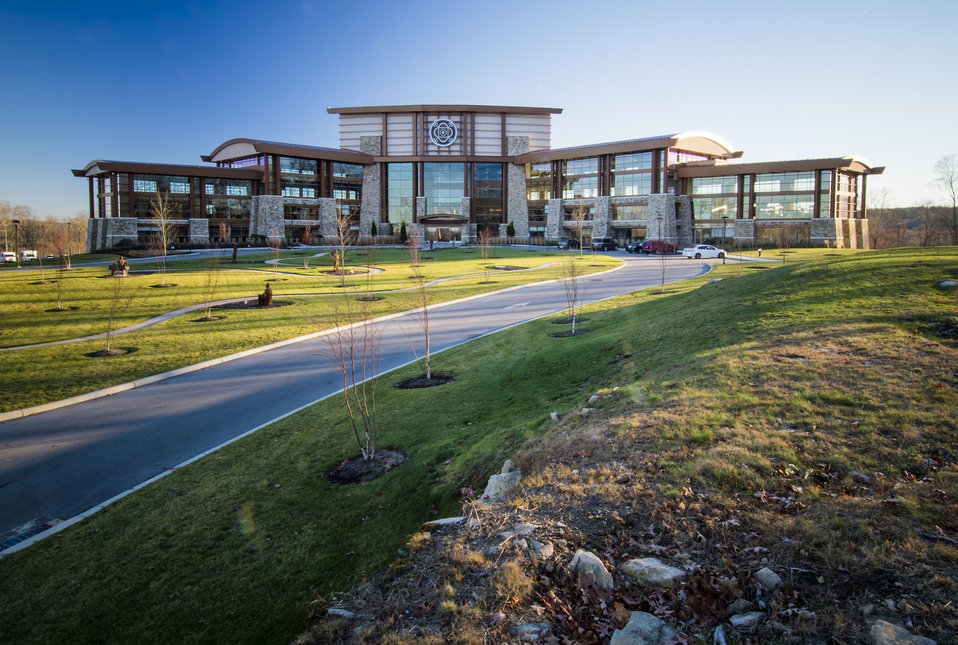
A U.S. Department of Agriculture (USDA) Rural Development (RD) Community Facility Loan was provided to the Mohegan Tribe for the construction of the Mohegan Tribe Community Center and Government Building in Uncasville, CT. USDA’s RD Community Facilities Programs makes and guarantees loans to develop essential community facilities in rural areas and towns of up to 20,000 in population. Loans and guarantees are available to public entities such as municipalities, counties, parishes, boroughs, and special-purpose districts, as well as to non-profit corporations and tribal governments. These funds can be used to construct, enlarge, or improve community facilities for health care, public safety, and public services. The Mohegan Tribe's newly completed Community Center and Government Building allows the tribal government to more fully and effectively administer the tribal government, health, housing and social programs of the Tribe and provide cultural resources and community gathering, and activities for its members. The 160,000 square foot building Center hosts an exhibit celebrating federal recognition, history of Mohegan Chiefs, a new Library and Archives space, Arts and Crafts room, gymnasium, and a new community room to enjoy food and family. The Center will continue the Tribe’s plan for growth and meeting the needs of its members. The ability to finance the project at reasonable rates through the USDA RD Community Facilities Programs ensures that the Tribal government more efficiently and effectively can manage the administration of essential government functions.